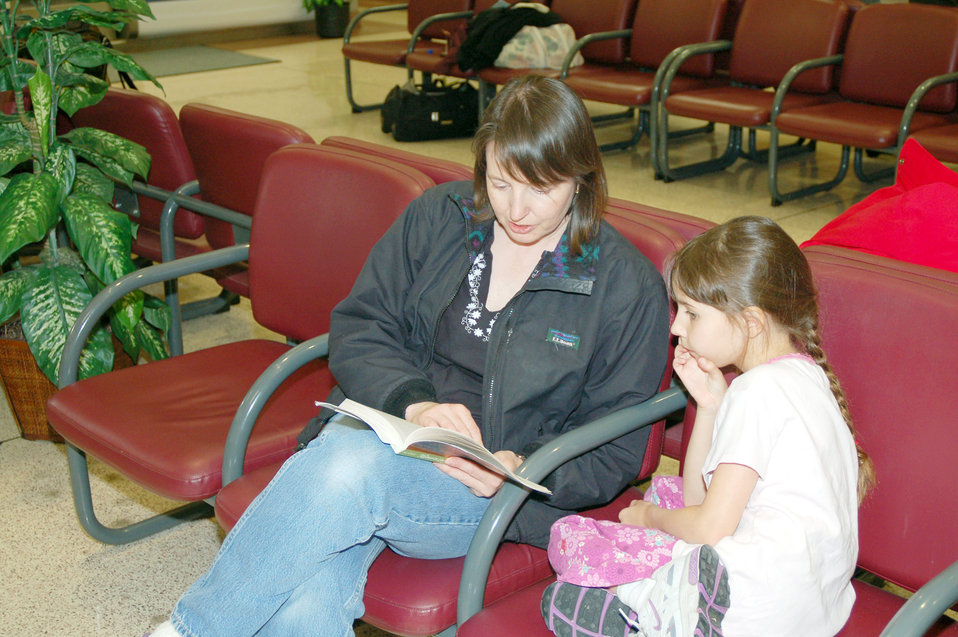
Flexibility key to airpower, Space-A

Burnadette Walkins reads to her daughter, Adriana, as they wait for a space-available flight from Dover Air Force Base, Del., to Ramstein Air Base, Germany. Mrs. Walkins is the wife of Army Lt. Col. Paul Walkins, stationed at Stuttgart, Germany.